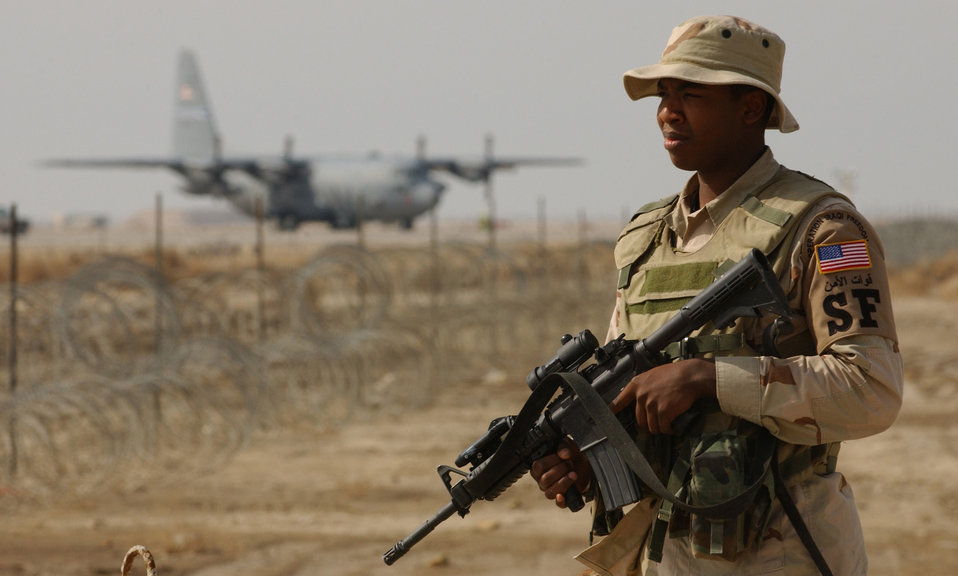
Outside the wire

ALI AIR BASE, Iraq -- Airman 1st Class Gherjuaen Robinson guards an entry control point here Feb. 1. Airman Robinson is with the 407th Expeditionary Security Forces Squadron.